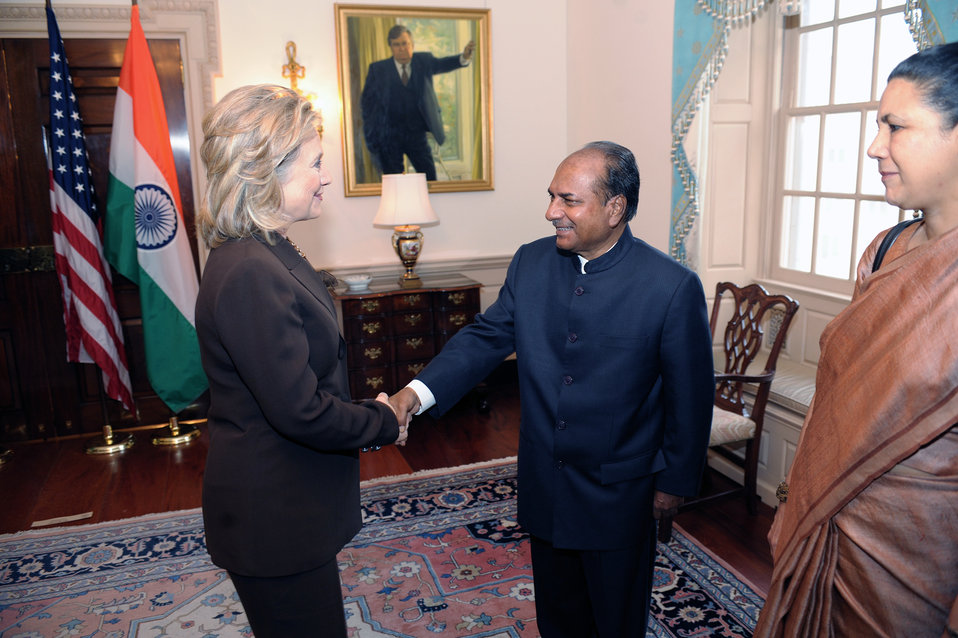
Secretary Clinton Shakes Hands With Indian Defense Minister A.K. Antony and Indian Ambassador Shankor

U.S. Secretary of State Hillary Rodham Clinton shakes hands with Indian Defense Minister A.K. Antony after their bilateral meeting at the U.S. Department of State in Washington, D.C., on September 28, 2010. Indian Ambassador to the U.S. Shankar is pictured on the right.